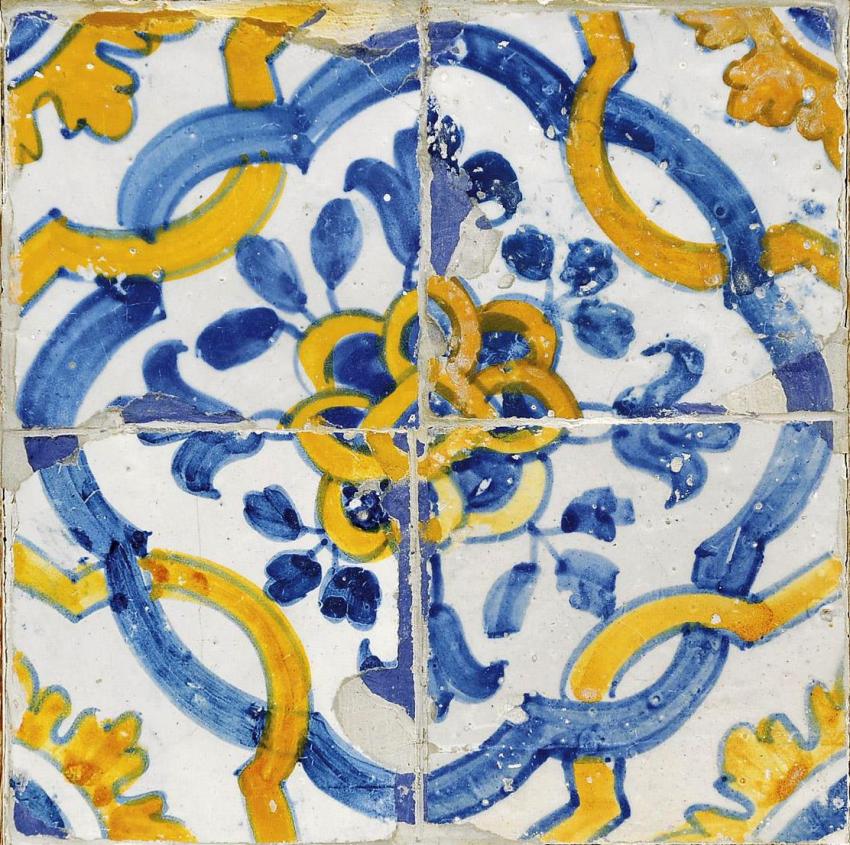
Azulejos de padrão camélia (1)